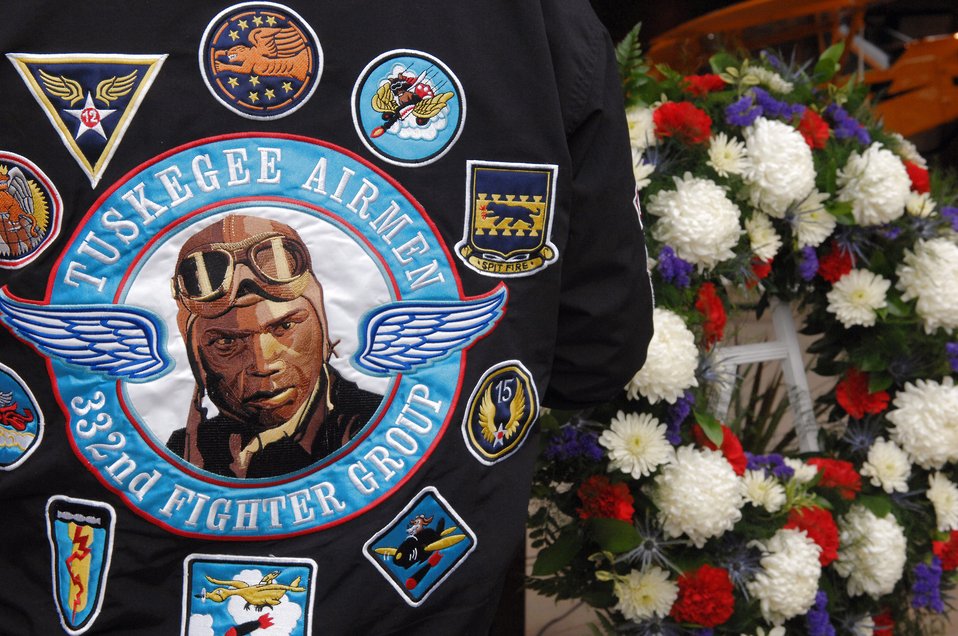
Remembering the Tuskegee Airmen

Lt. Col. Lee Archer died Jan. 27, 2010, at the age of 90. He was a member of the famed Tuskegee Airmen and flew some 169 combat missions during World War II.